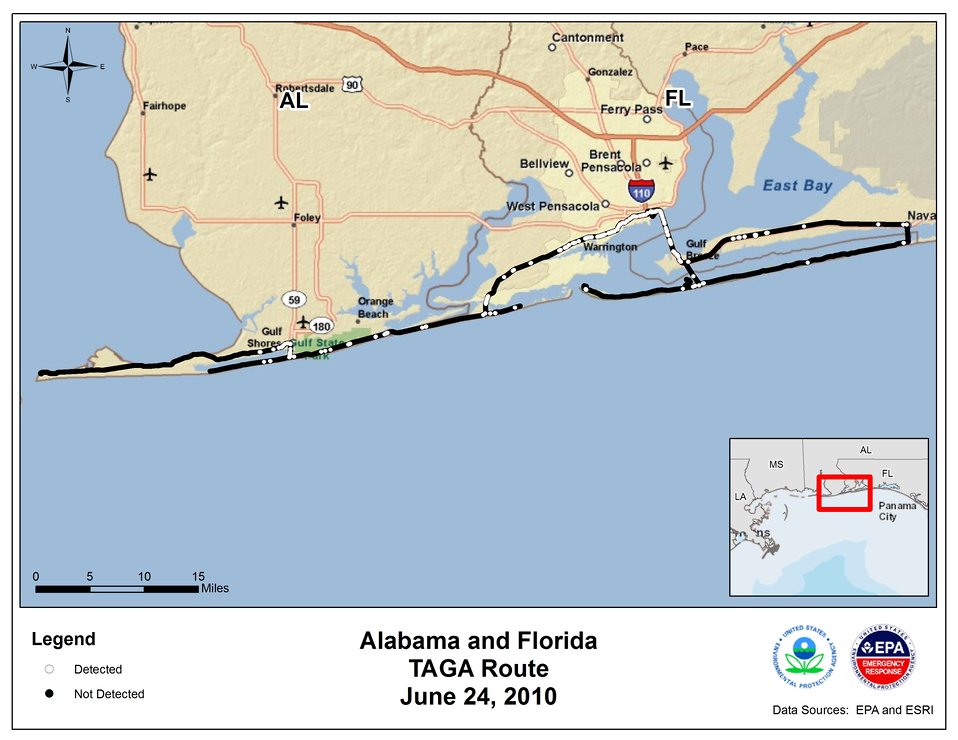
EPA TAGA Air Monitoring Locations June 24, 2010